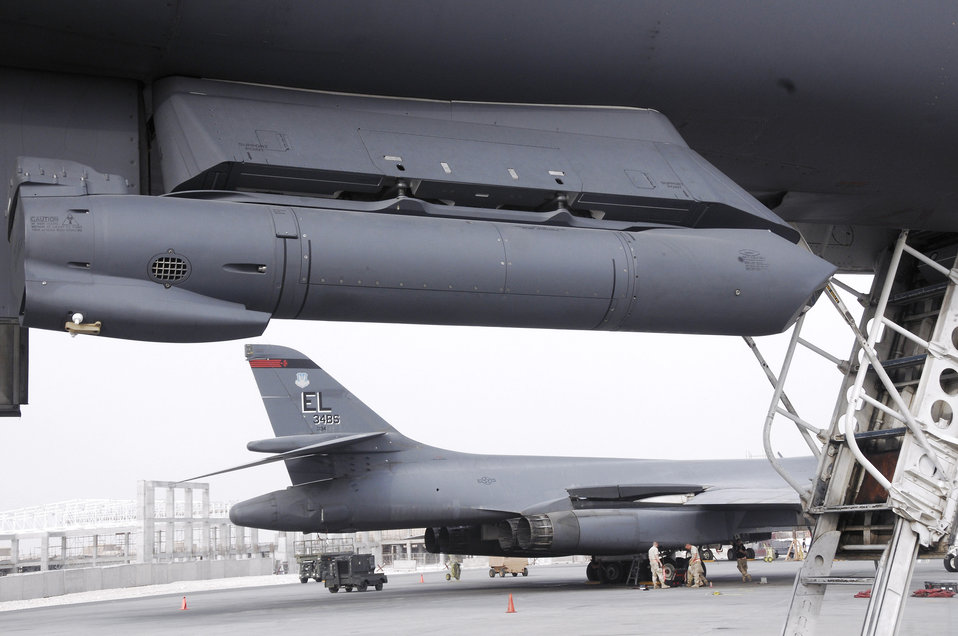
Sniper ATP-equipped B-1B has combat first

A Sniper Advanced Targeting Pod hangs from the underbelly of a B-1B Lancer after a recent mission in Southwest Asia Aug. 5. The Sniper ATP provides enhanced target identification for aircrew, allowing them to detect and analyze targets on the ground via real-time imagery.